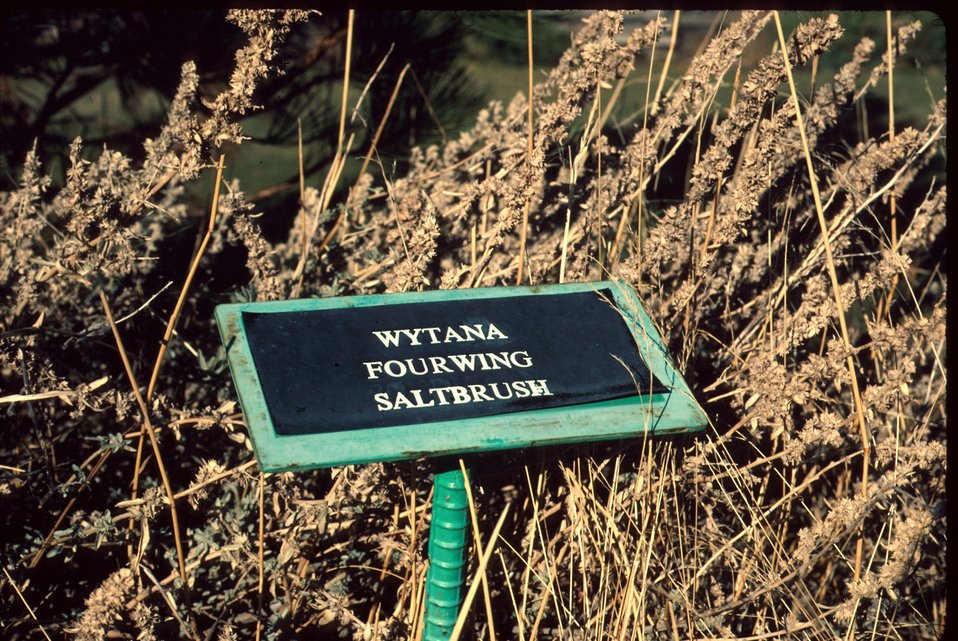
Wytana 4-Wing saltbush, Atriplex Brush